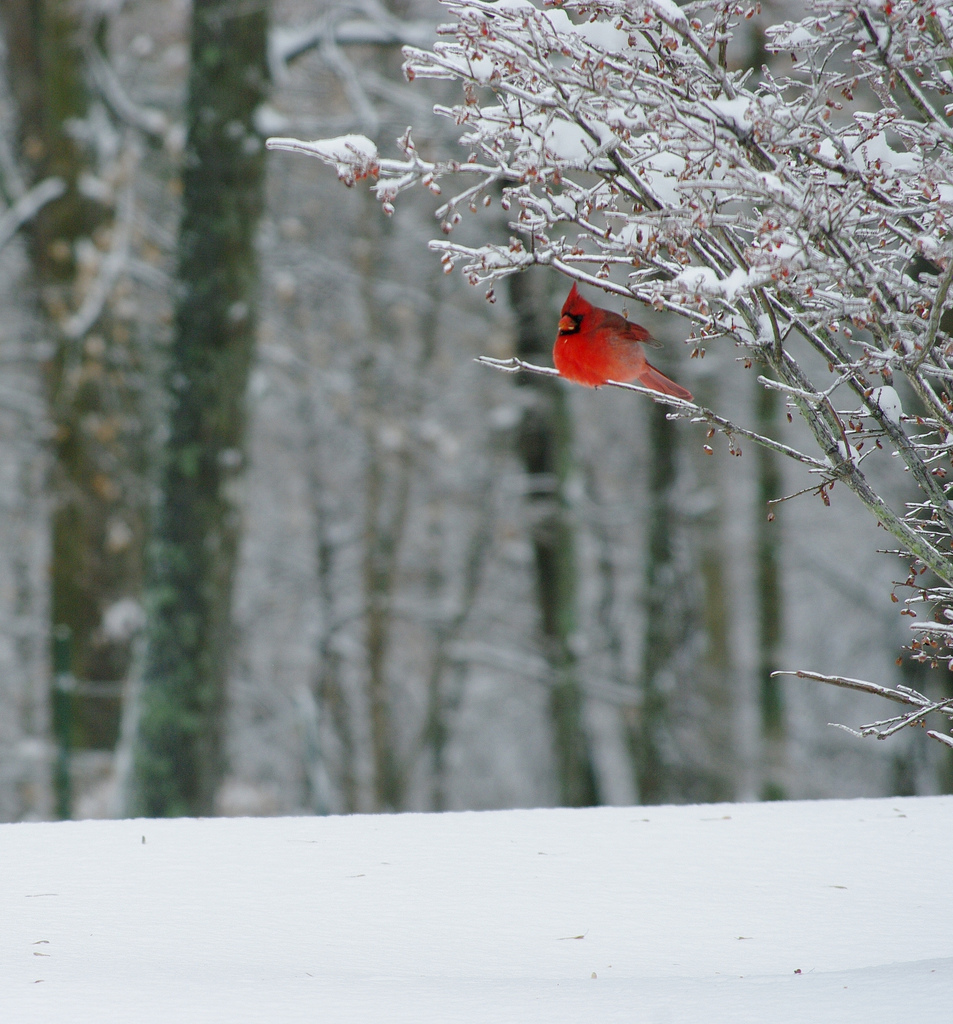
cardinal in snow

Muscatatuck National Wildlife Refuge, IN